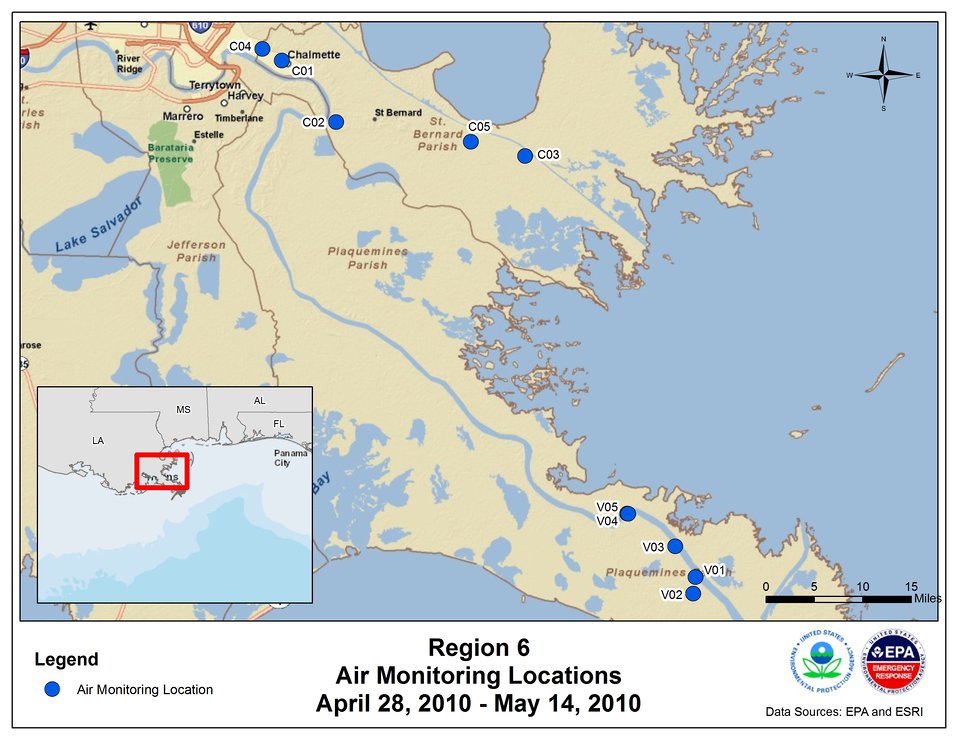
EPA Air Monitoring Locations April 28 - May 14, 2010